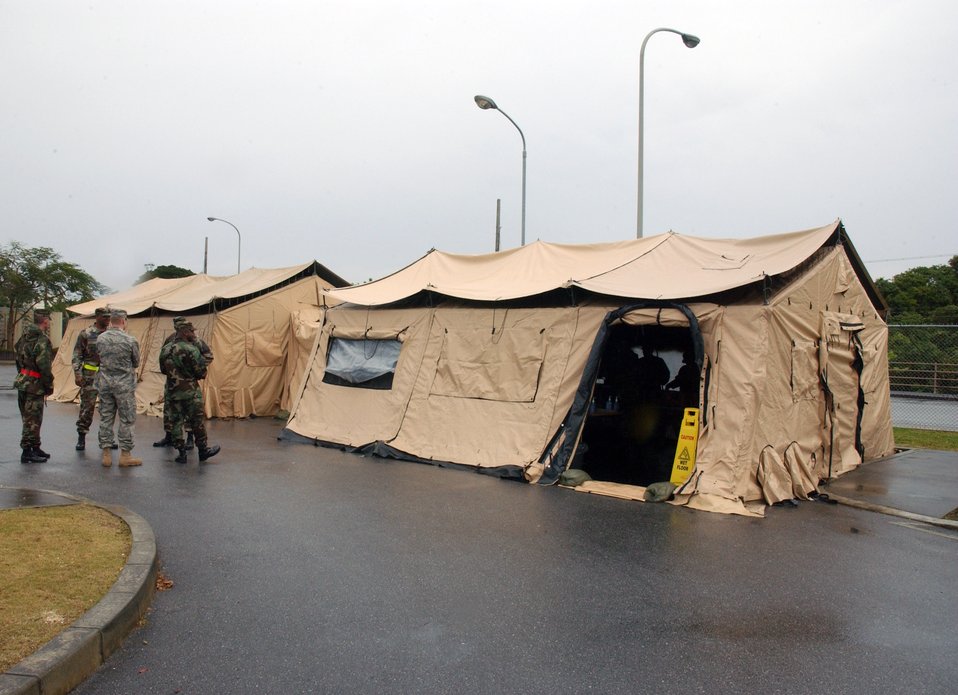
From pallet to palette

The 18th Services Squadron offers a variety of food from their single pallet expeditionary kitchen during the Pacific Air Forces Operational Readiness Inspection March 11 at Kadena Air Base, Japan. The deployable kitchen can be set up from pallet to serving in under four hours. PACAF is conducting the inspection from March 9 to 15 to validate the mission readiness of the 18th Wing.